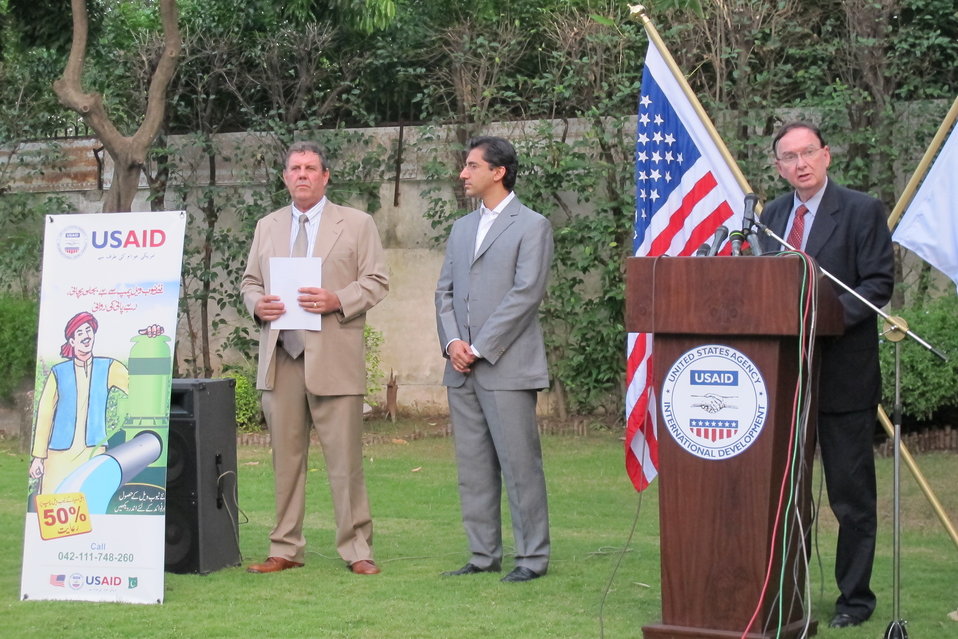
Launch of first-ever behavioral change campaign for energy efficiency in agriculture sector

Islamabad, July 28, 2011 – USAID Acting Deputy Director John Morgan speaking at the launch of Pakistan’s first-ever behavioral change campaign for energy efficiency in agriculture sector.

This campaign is sponsored by the U.S. Government as part of the United States commitment to support the Government of Pakistan in strengthening the country’s energy sector. This commitment was affirmed by U.S. Secretary of State Hillary Clinton in October 2009, when she announced a number of new energy programs. Through these programs, the U.S. Government is now working with Pakistan to reduce energy transmission losses, to improve energy production, and to increase the efficiency of the energy use.

The United States energy assistance, delivered by the U.S. Agency for International Development (USAID), includes a number of programs that together, will increase energy production capacity by approximately 600 Mega Watts.